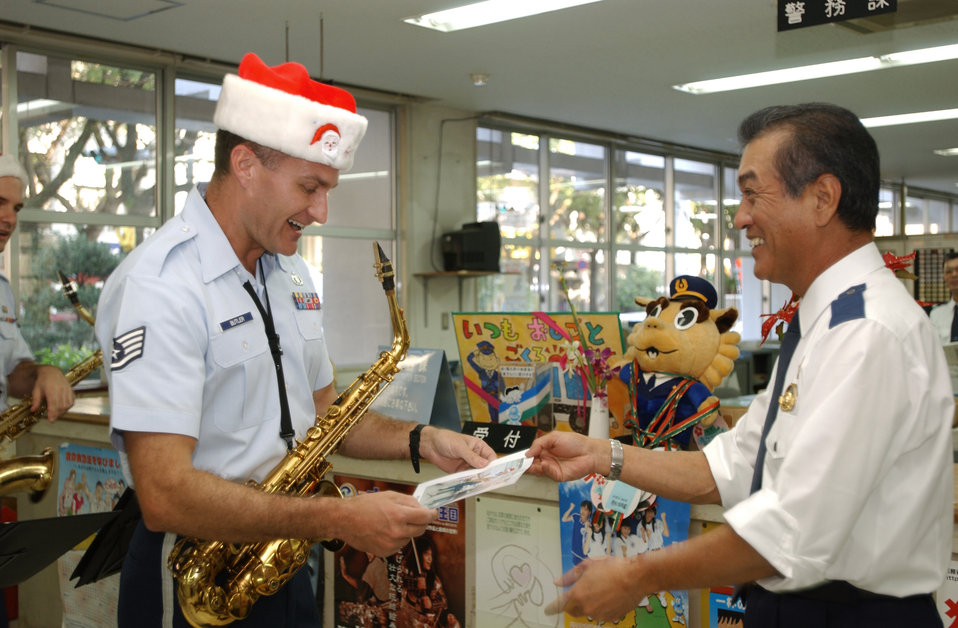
Santa serenade

OKINAWA CITY, Japan -- Staff Sgt. James Wagner (left ), of the Pacific Saxophone Trio, accepts a photo of his group Dec. 14 from police chief Takashi Nakasone. The trio, which played holiday music at nearby Kadena Air Base work areas and off-base venues during a two-day visit, is part of the Pacific Air Forces Band-Asia based at Yokota AB, Japan.